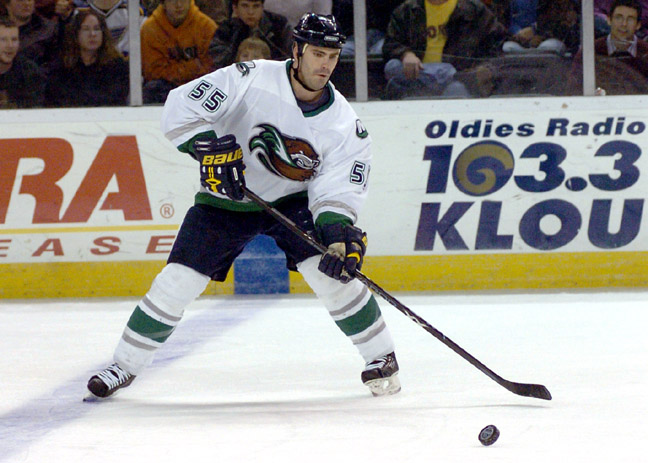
w:Barret Jackman, Canadian ice hockey player, playing for the w:Missouri River Otters